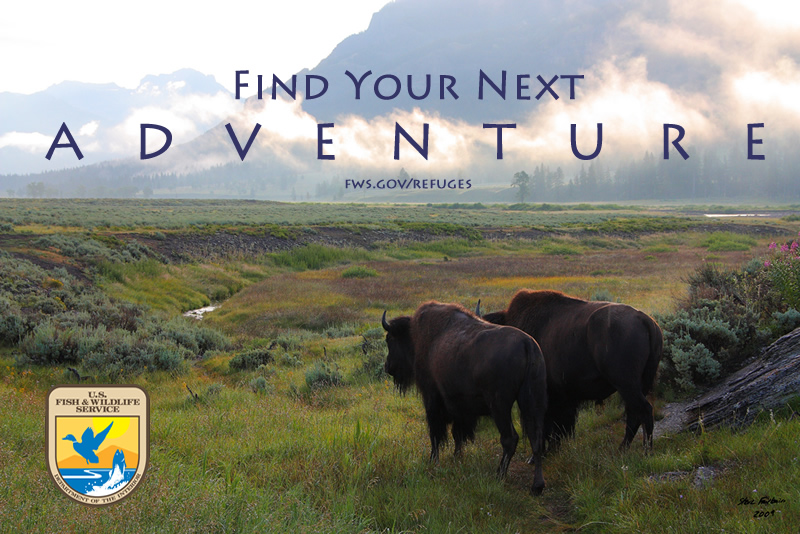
Find Your Next Adventure